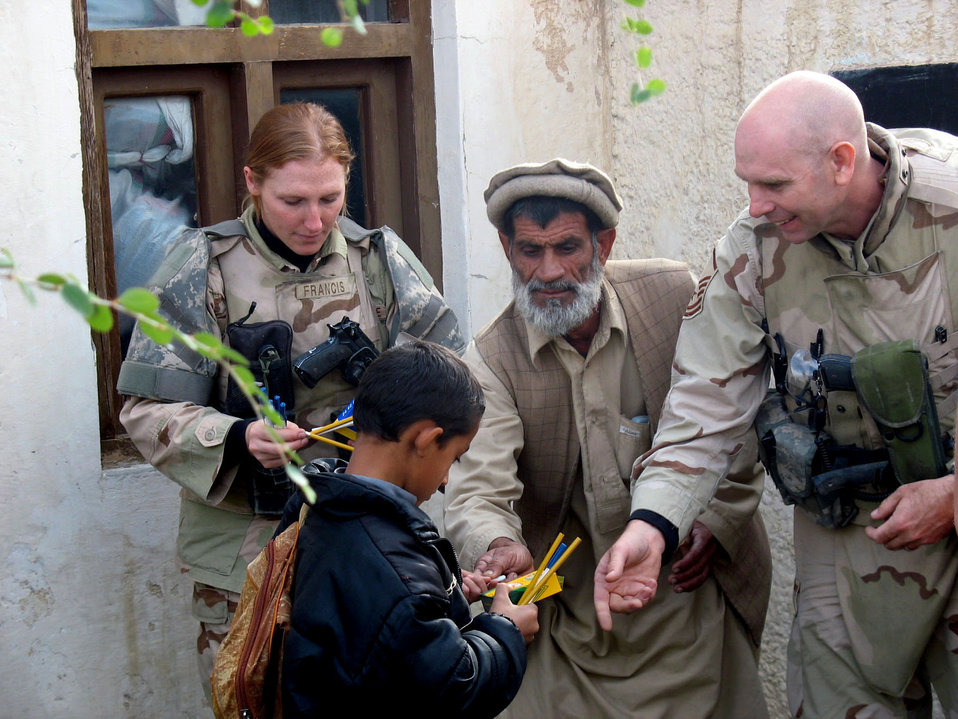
PRT delivers supplies to Afghan schools

An Ishaq Nangial High School teacher hands out school supplies to children with assistance from Master Sgt. Joseph Sawyer and Staff Sgt. Samantha Francis, both with the Methar Lam provincial reconstruction team, during a humanitarian assistance mission Nov. 21 in Methar Lam City, Afghanistan.